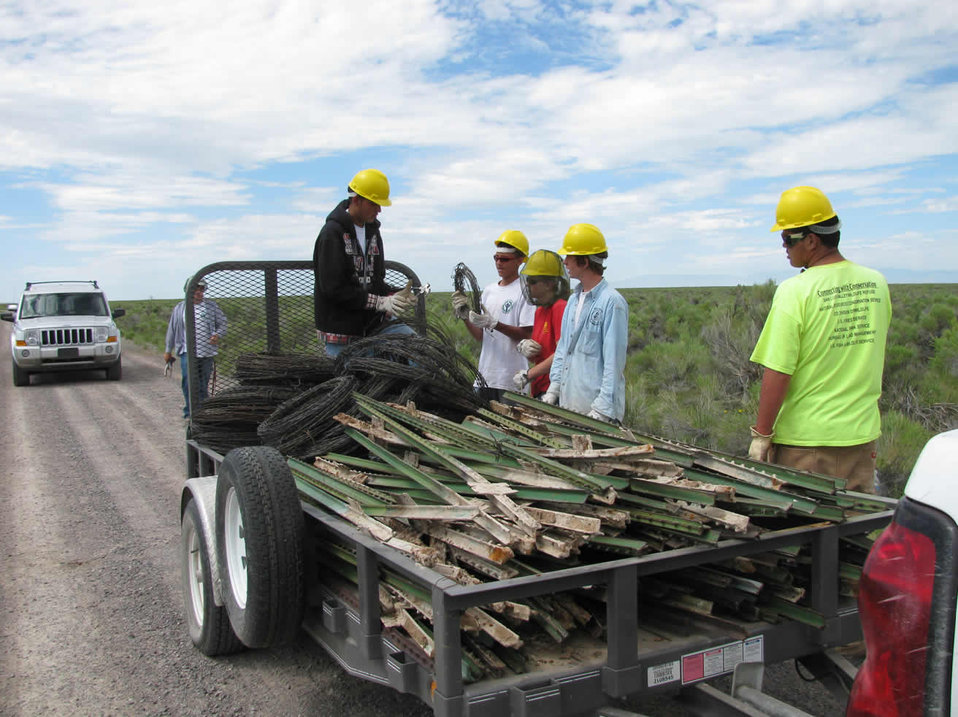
Youth Conservation Corps at Baca National Wildlife Refuge

The San Luis Valley NWR Complex Youth Conservation Corp Program participants remove fence from Baca National Wildlife Refuge in Colorado. This Program exposed youth to a variety of natural resource conservation efforts on federal, state and private lands.